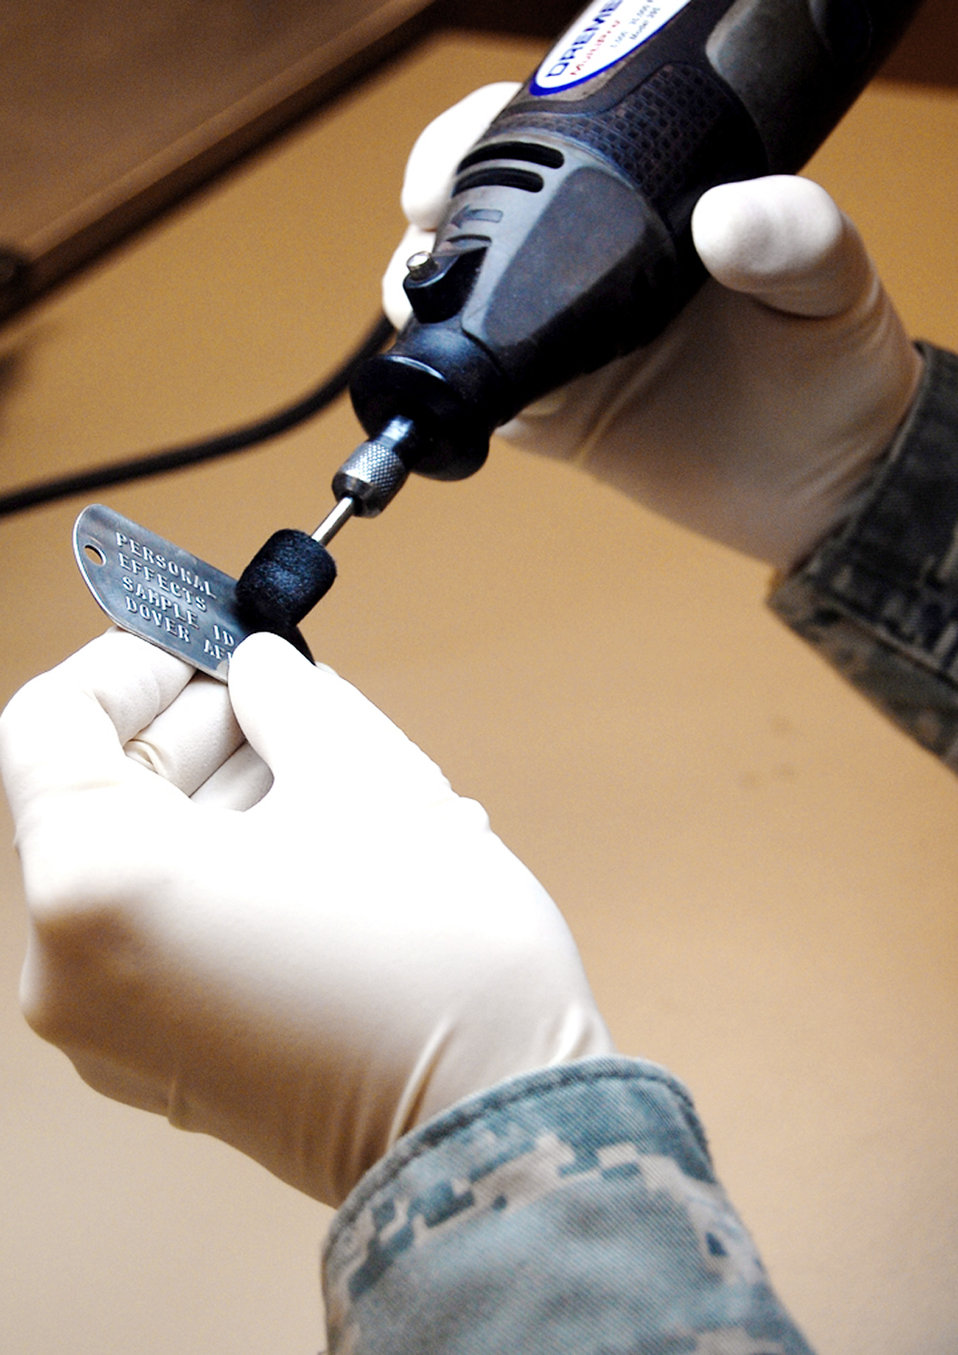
Polish and more polish

Master Sgt. Tracy Bailey demonstrates the care taken to prepare personal effects at the Air Force Mortuary Affairs Operations Center Feb. 25, 2010, at Dover Air Force Base, Del.